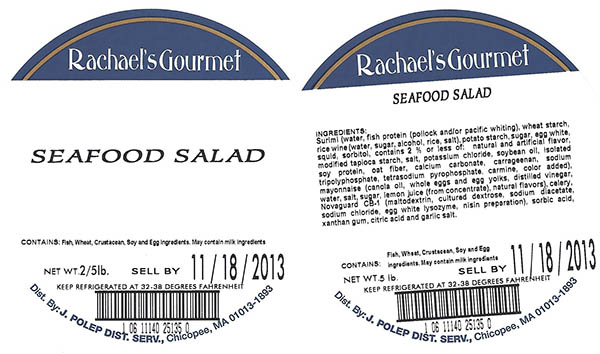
RECALLED – Prepared salads

October 24, 2013 – Product Recall – Boston Salads and Prepared Foods Recalling Ready-To-Eat Products Because of Possible Health Risk.